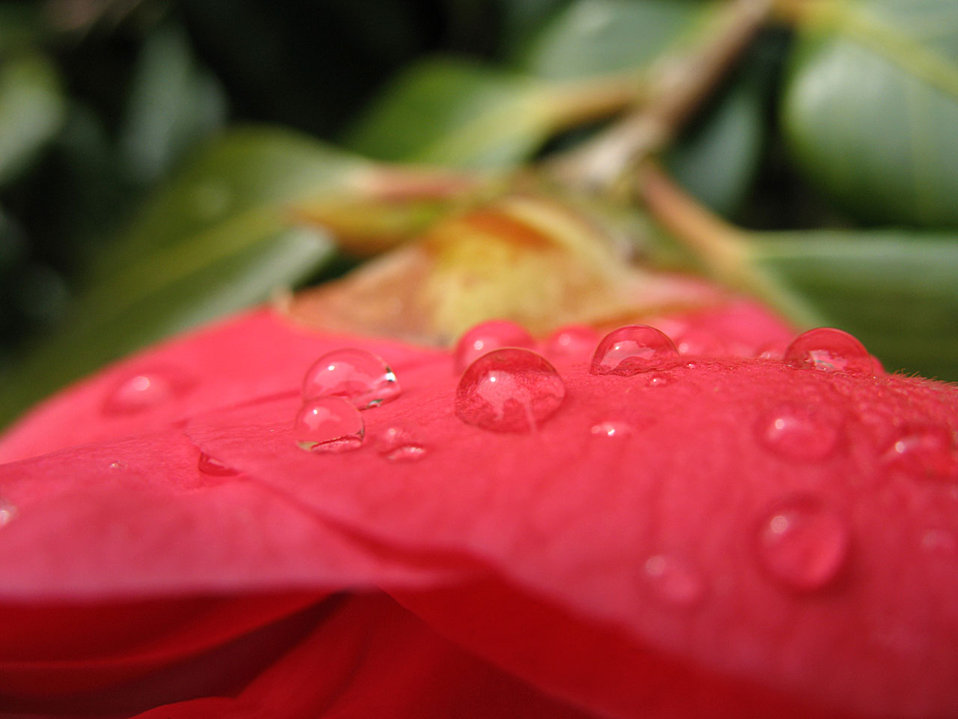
Drops

Water drops on camellia flower.